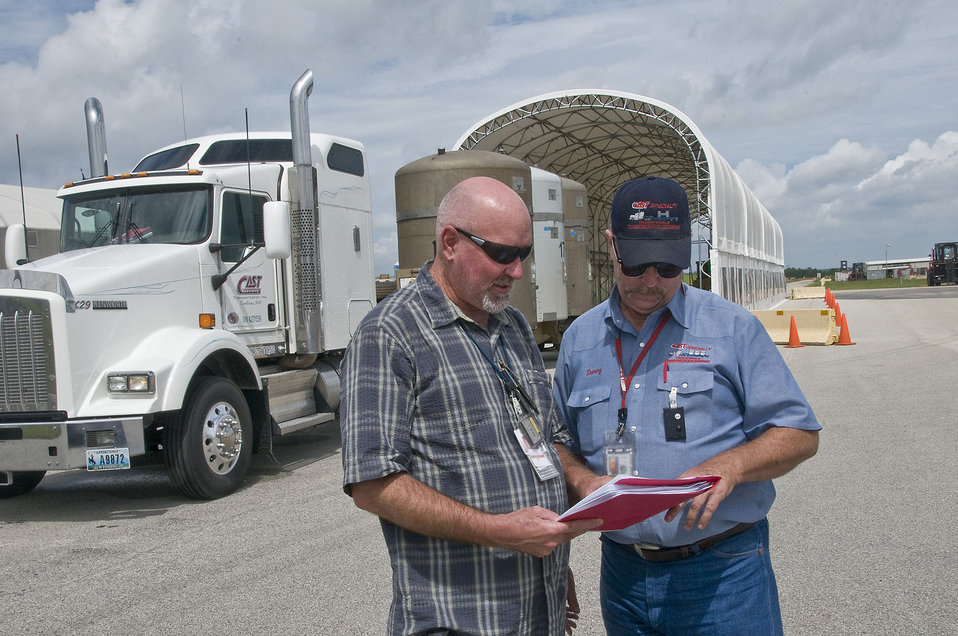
Final checks being made before a shipment leaves SRS